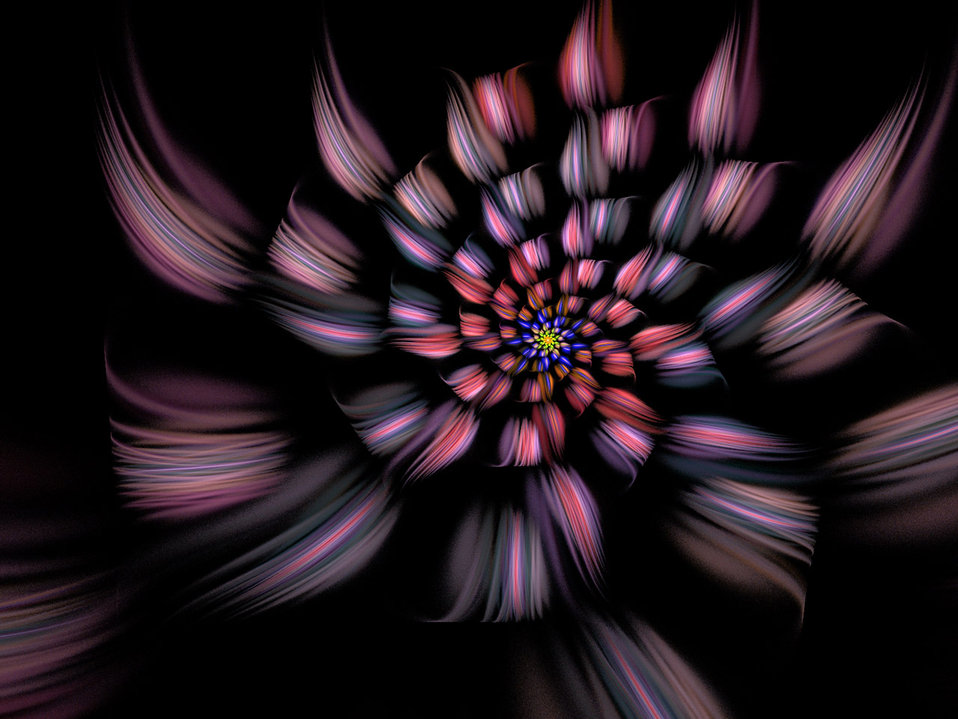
Spiral flower

Spiral shaped like a flower in purple, and other colours.